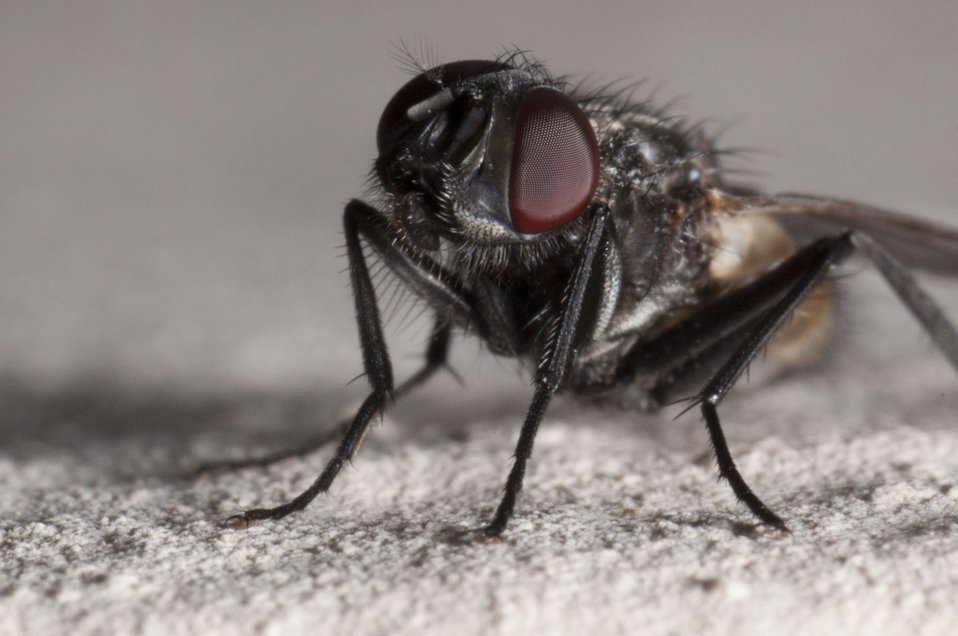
A fly that looks at you.